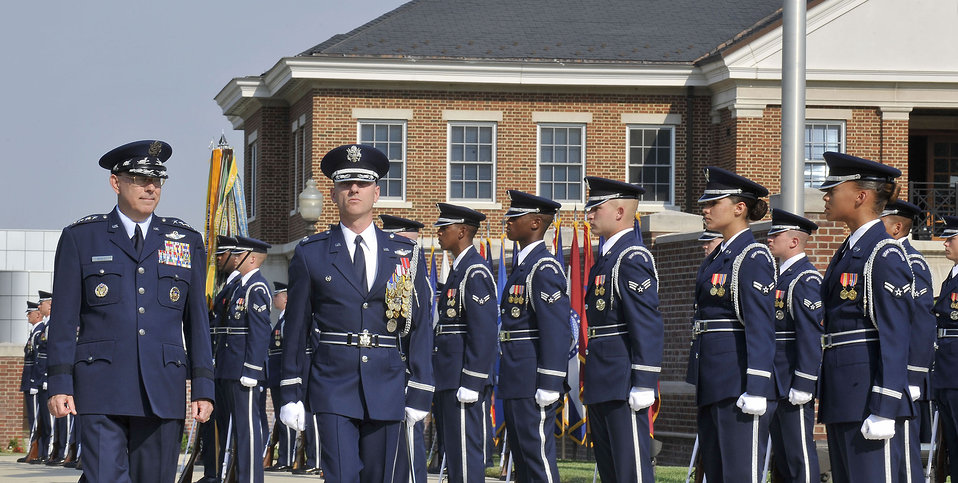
CSAF Retirement Ceremony

Gen. T. Michael Moseley reviews the troops with Lt. Col. Anthony Taylor, commander of the United States Honor Guard, during the former's retirement ceremony on Bolling Air Force Base, D.C., July 11. General Moseley is the 18th Chief of Staff.